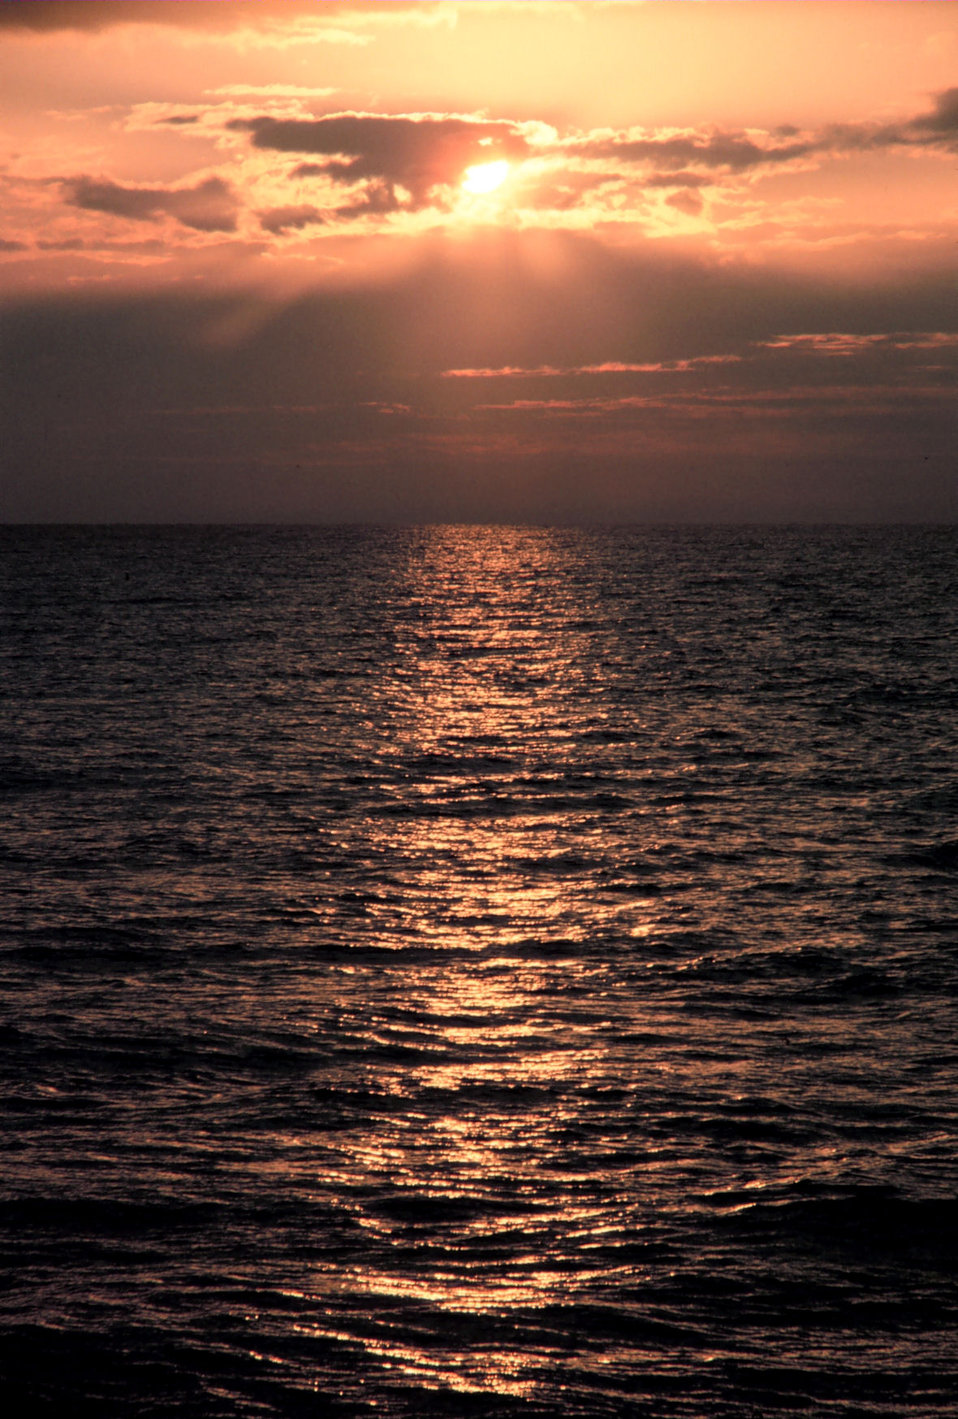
Crepuscular rays streaming downward from a late afternoon sun.